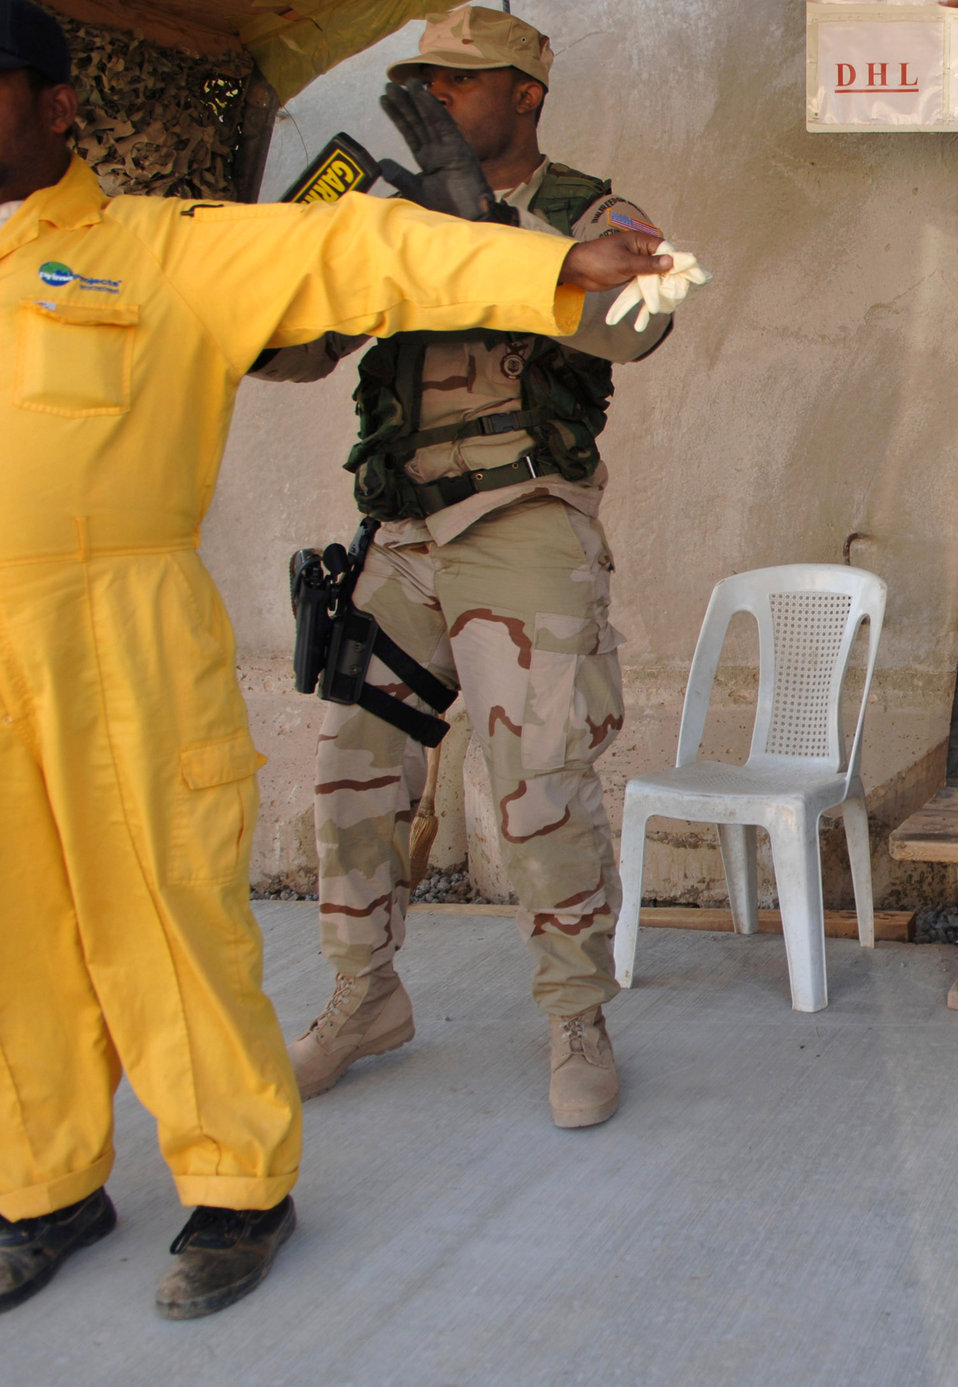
Security forces Airmen protect Iraq's combat airpower hub

Airman 1st Class Marquis Garvin uses a metal detector to check a third-country national contractor for illegal items such as cameras and weapons Feb. 21 at Balad Air Base, Iraq. Airman Garvin is assigned to the 332nd Expeditionary Security Forces Squadron.